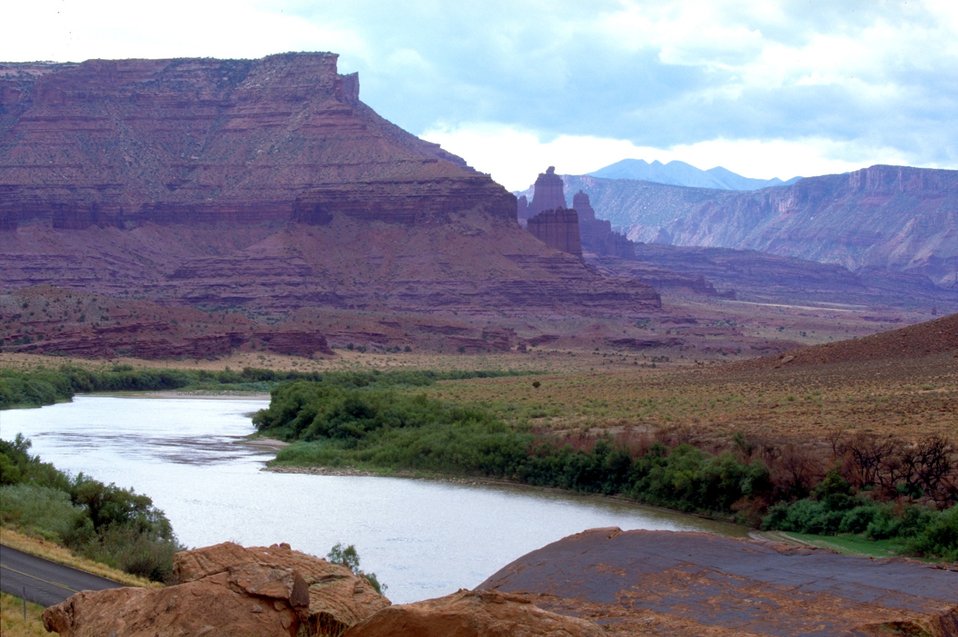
Fisher Towers along Highway 128, near Moab, Utah.